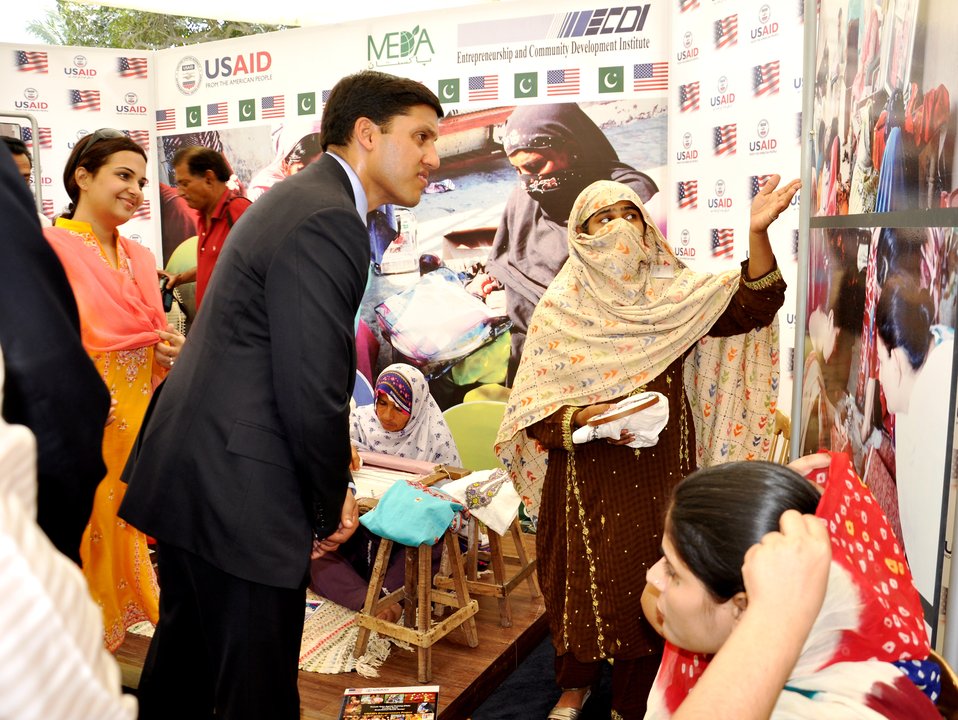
Dr. Rajiv Shah visiting Entrepreneurs project stalls